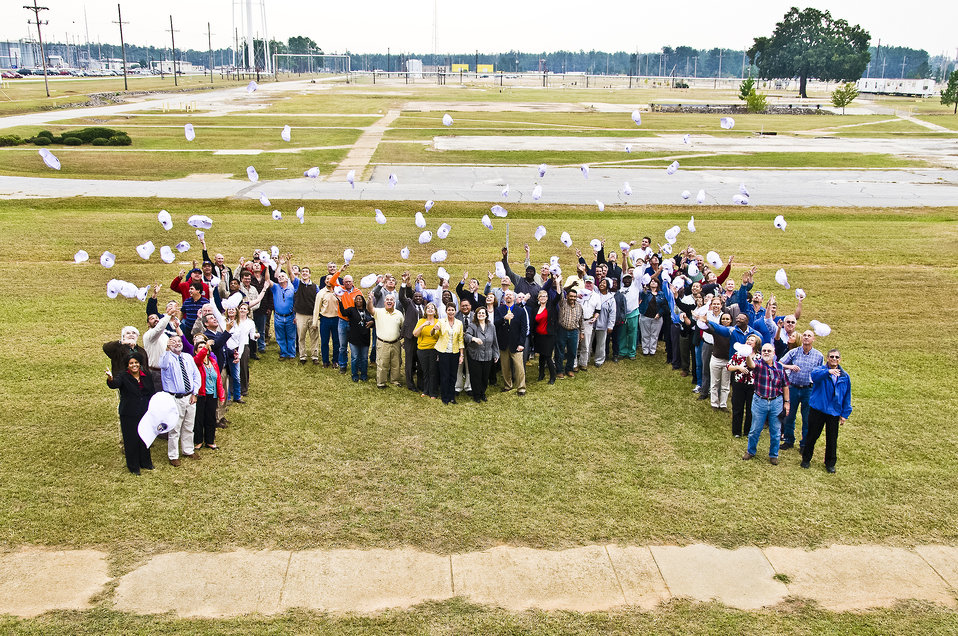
SRS M-Area Operable Unit Closing

Employees who contributed to M-Area closure celebrate the event with a hat toss.